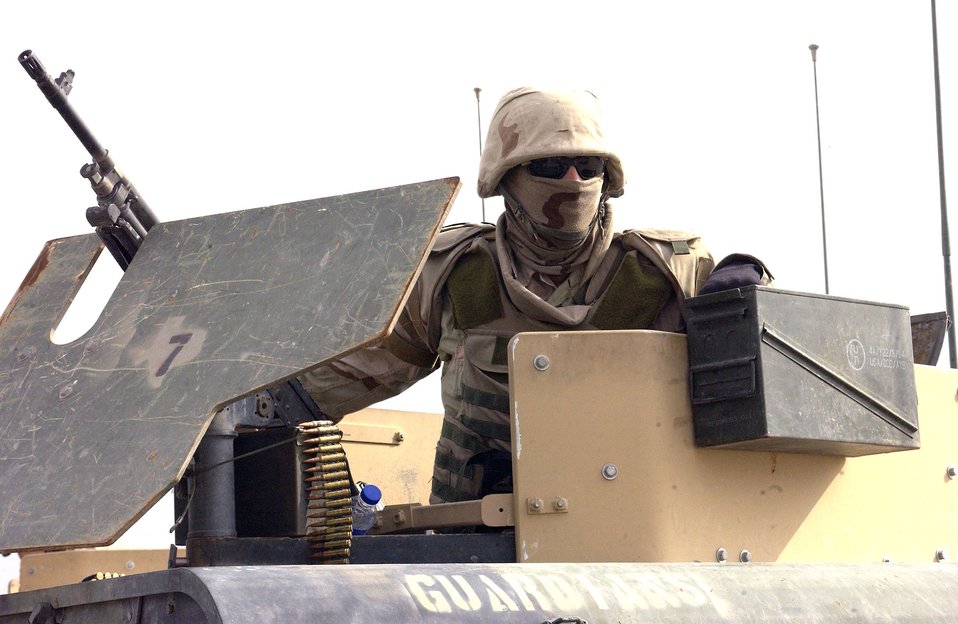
Convoy ops

CAMP BUCCA, Iraq - Airman Eric Kreuser prepares the turret area and receives final instructions prior to a convoy mission. Airman Kreuser is a turret gunner deployed here from Eielson Air Force Base, Alaska, with the 586th Expeditionary Security Forces Squadron.